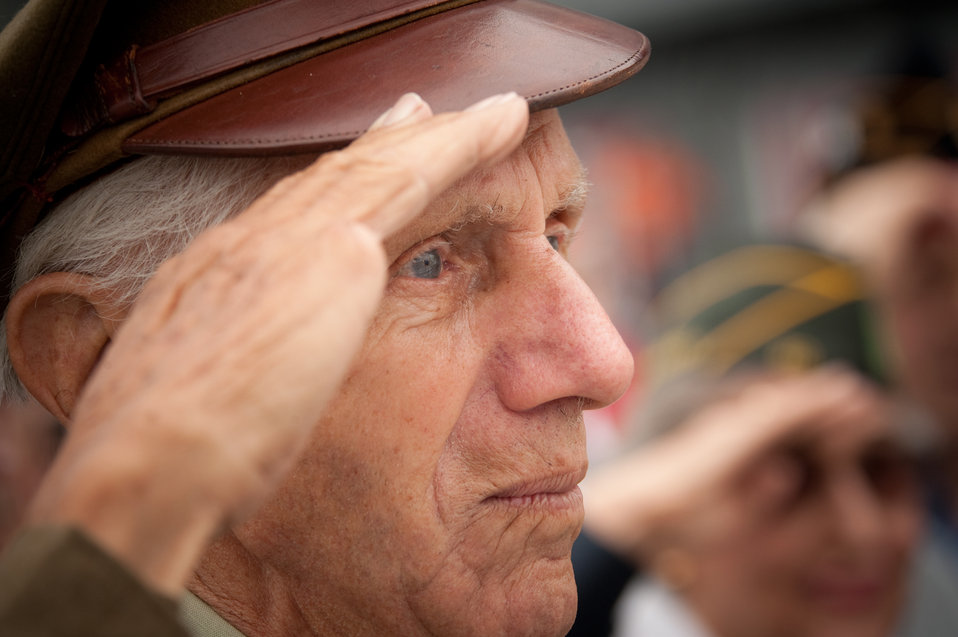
Air Force Week New York City Proclamation Ceremony

Frank Milano salutes during playing of the national anthem for the Air Force Week New York City proclamation ceremony at the USS Intrepid on Aug. 24, 2010. Mr. Milano of New York City, was a Corporal in the Army Air Force, stationed in Europe with the 9th Air Force during World War II. The event at the Intrepid Sea, Air & Space Museum was highlighted by a six-ship flyover by the USAF Thunderbirds. The Honorable Michael Donley, Secretary of the Air Force attended, along with General Raymond Johns, Commander of Air Mobility Command. The Police Commissioner of the City of New York, the Honorable Raymond Kelly, represented NYC. Mr. Greg Kelly of